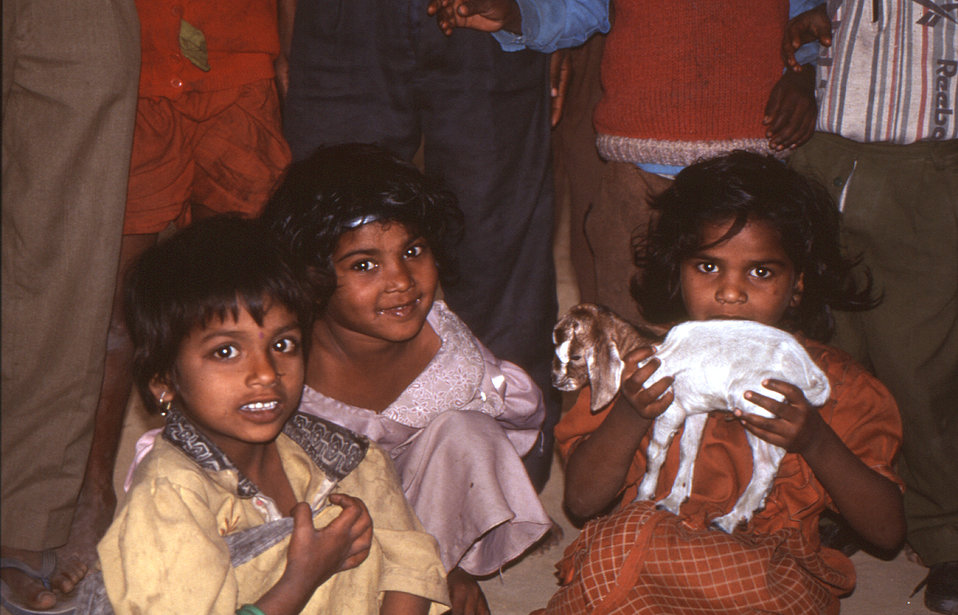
This photograph, taken in 2000, depicted three seated girls amongst a gathering of family members. They are enjoying their new baby lamb, which was being held by one of the girls at right. The image was captured during a visit made to this village by health care practitioners, which included Stop Transmission of Polio (STOP) members such as Chris Zahniser, B.S.N., R.N., M.P.H., who was also the provider of this picture, as well as a number of others from this field assignment. The visit allowed the health care workers to check on the child village members in order to determine their polio vaccination status.